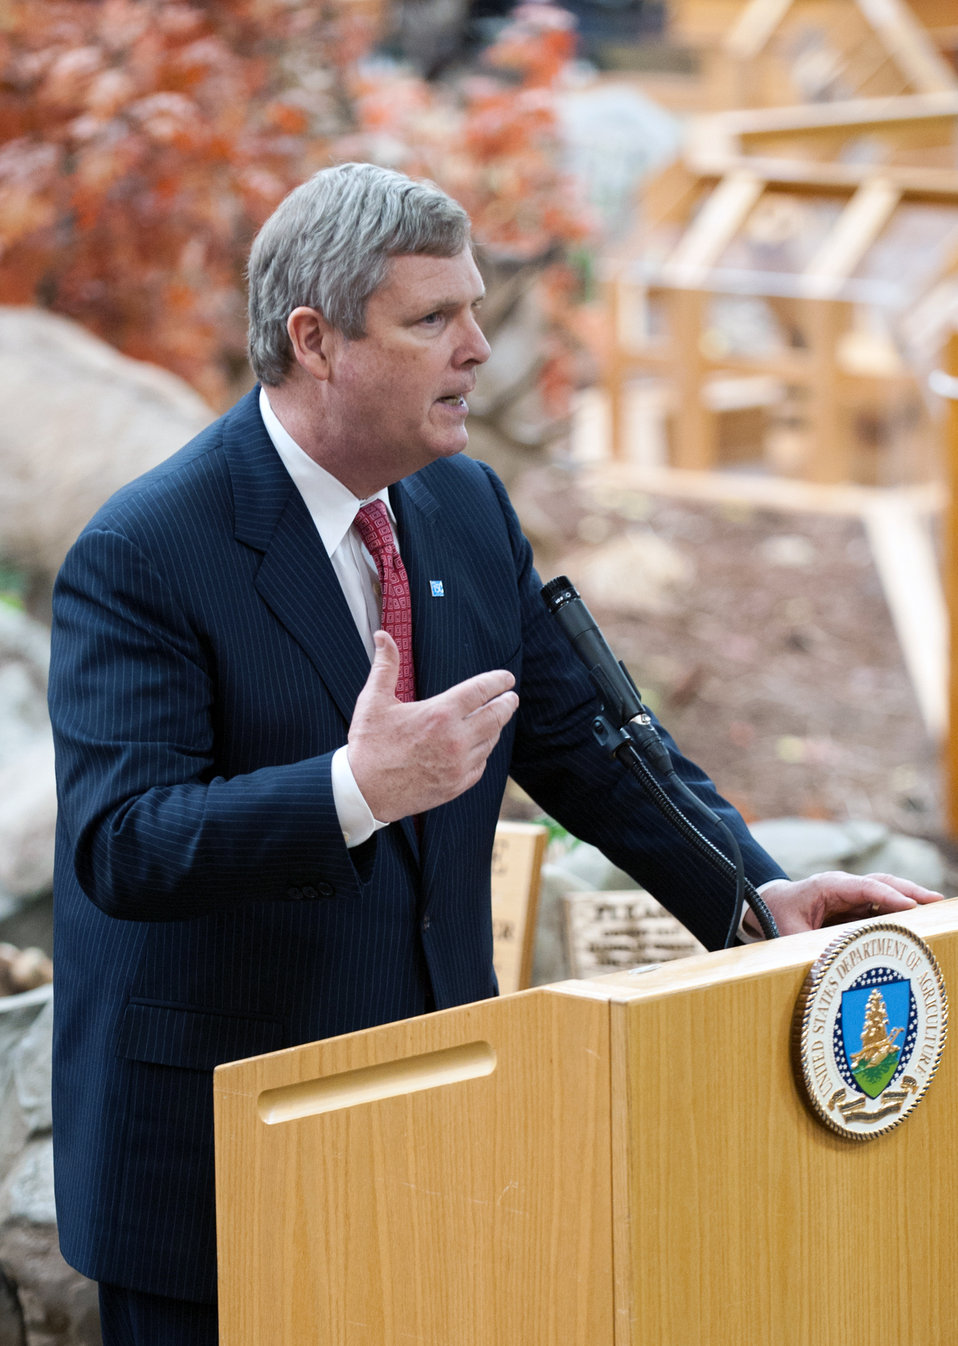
Agriculture Secretary Tom Vilsack highlighted the U.S. Department of Agriculture's conservation work at a Cabela's store in Dundee, MI, on March 16, 2012 .